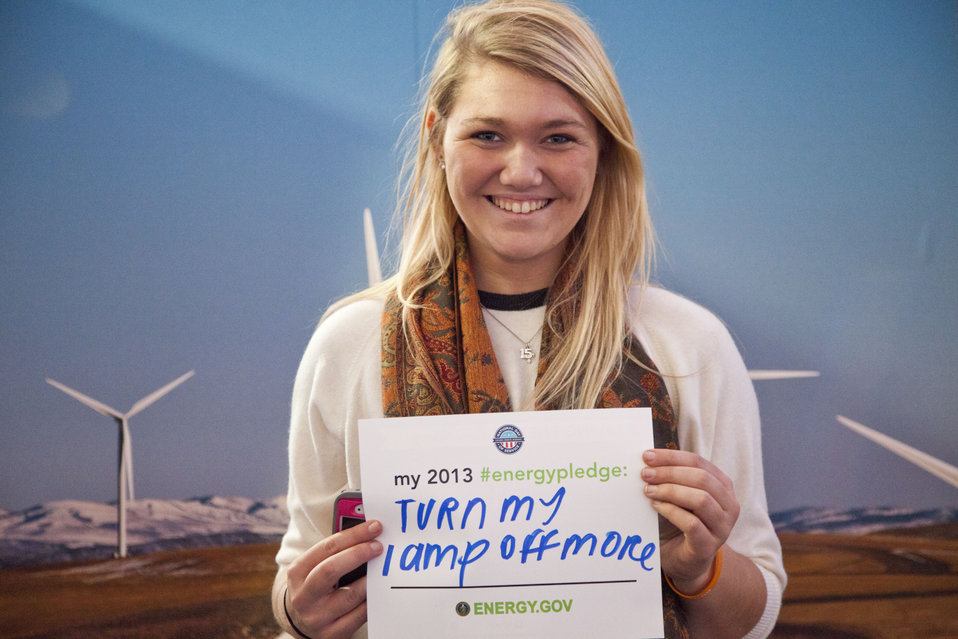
What's your #energypledge?